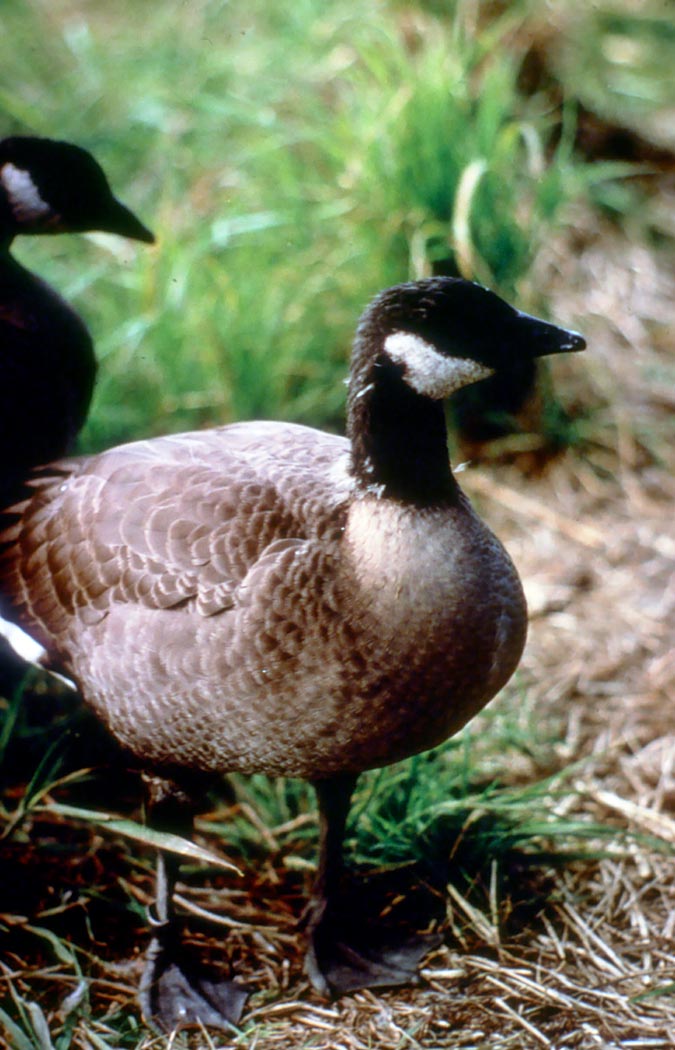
Dusky Canada Goose.